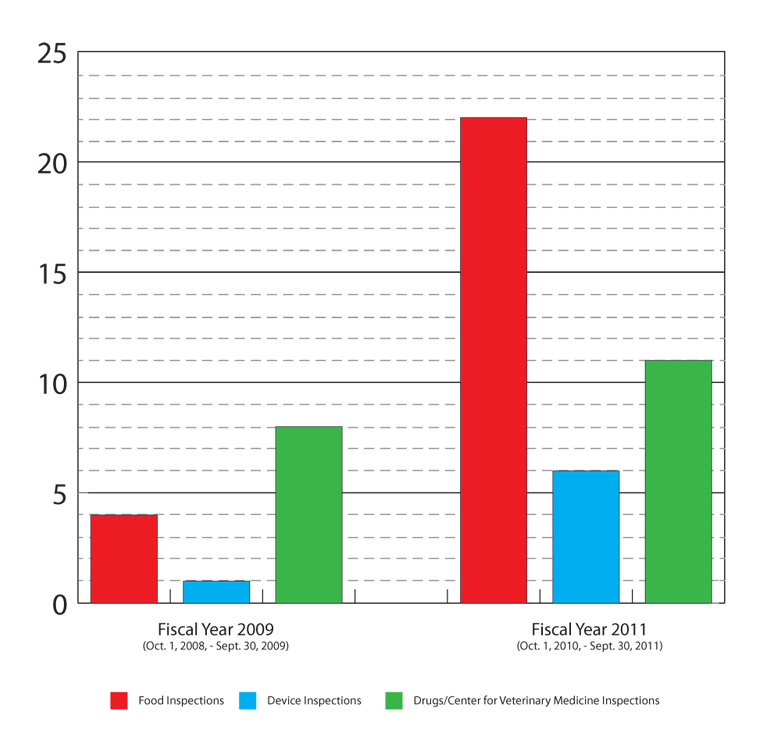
FDA’s China Offices Focus on Product Safety

Now, FDA’s China-based investigators travel throughout the country inspecting factories where regulated products bound for the U.S. are made and processed. Read this FDA Consumer Update: www.fda.gov/ForConsumers/ConsumerUpdates/ucm284461.htm

Consumer Updates are a quick and easy way to pick up important health information for you and your family. For a complete list of Consumer Updates see the Consumer Updates photo set: www.flickr.com/photos/fdaphotos/sets/72157624900896241/.

For the latest Consumer Updates go to: www.fda.gov/forconsumers/consumerupdates

This image is free of all copyright restrictions and available for use and redistribution without permission. Credit to the U.S. Food and Drug Administration is appreciated but not required.